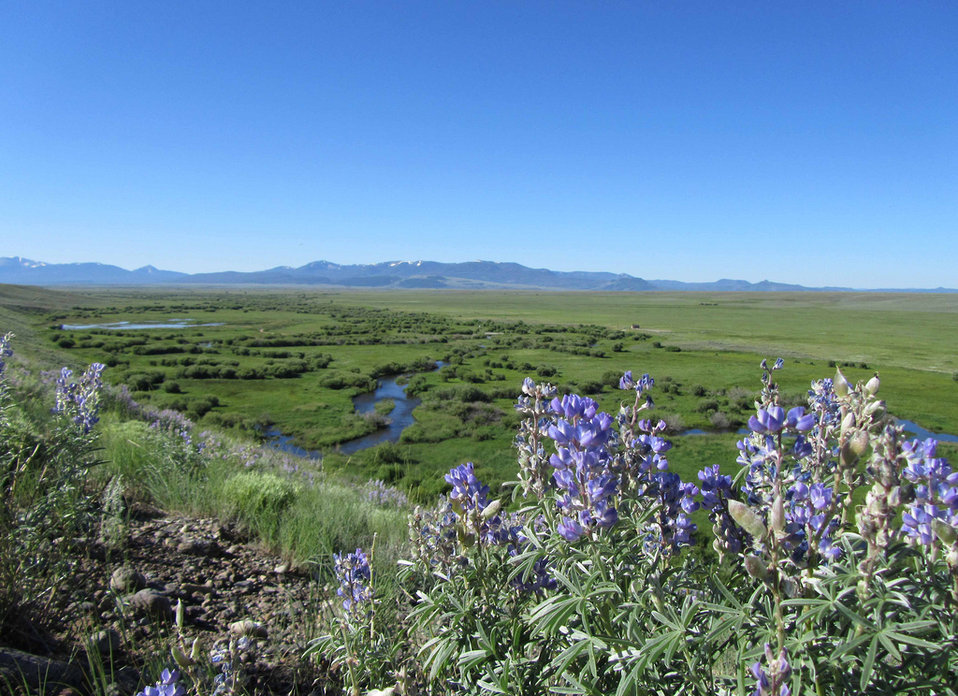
lupines

Arapaho National Wildlife Refuge, CO